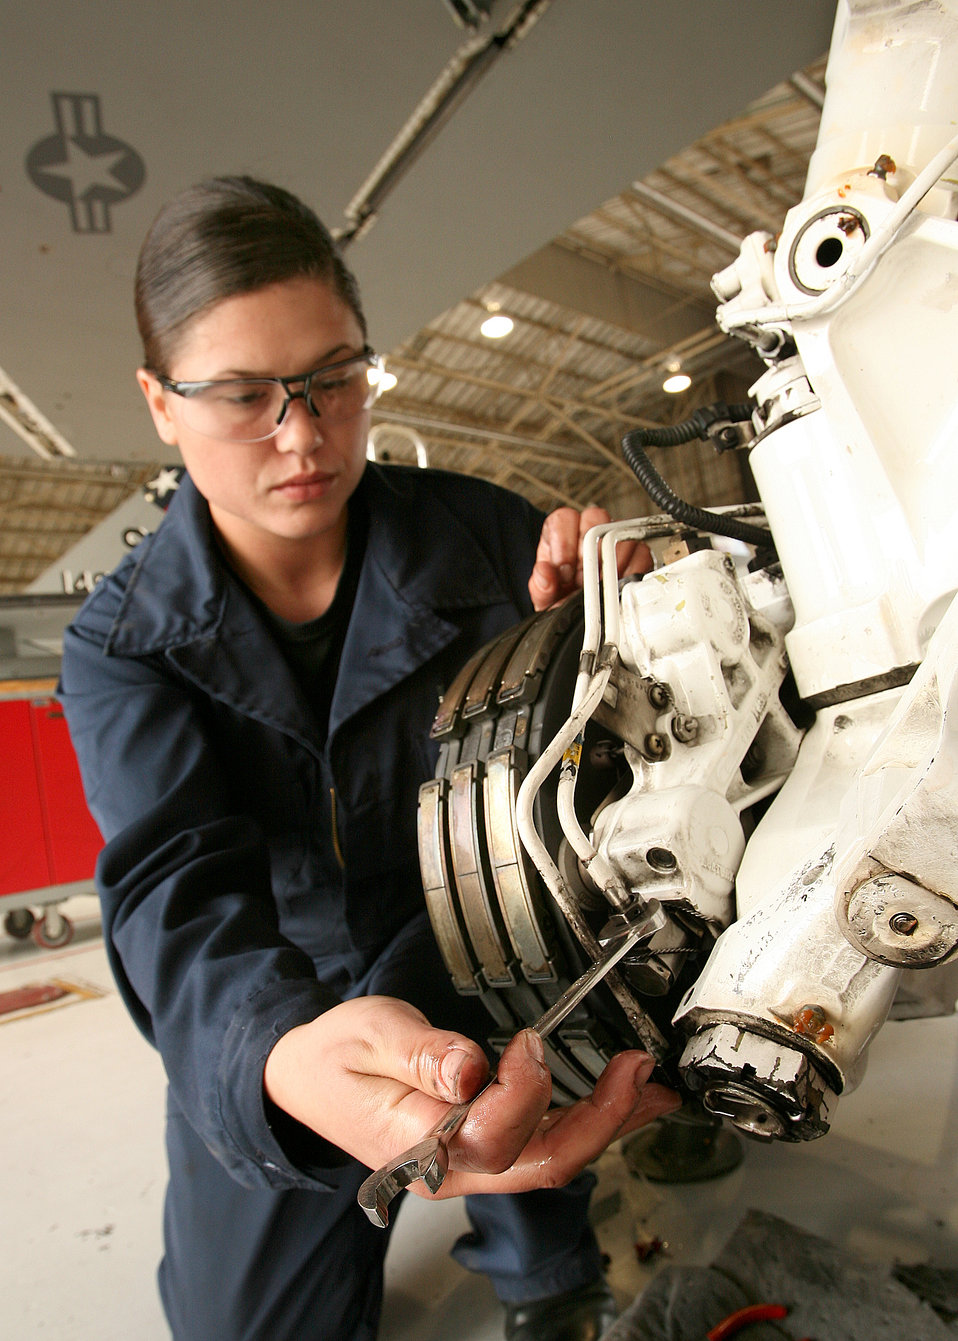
That's the brakes!

Airman 1st Class Nicole Furwa installs landing gear brakes on an F-16 Fighting Falcon March 10 at Lackland Air Force Base, Texas. She is assigned to the 149th Maintenance Squadron which is part of the Texas Air National Guard's 149th Fighter Wing, an F-16 training unit.